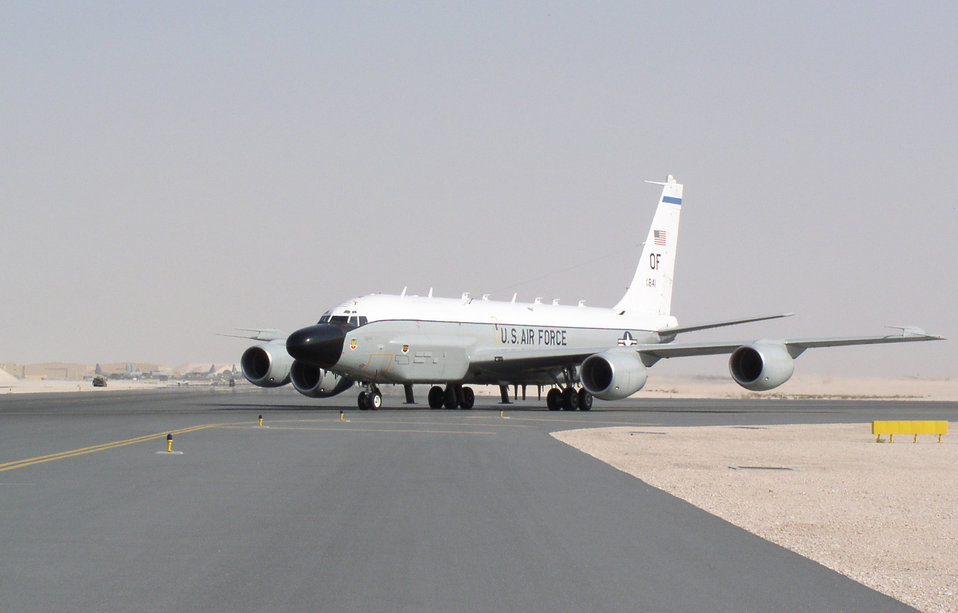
airpower summary

RC-135V/W Rivet Joint reconnaissance aircraft support Operations Iraqi and Enduring Freedom with near real time on-scene intelligence collection, analysis and dissemination capabilities.